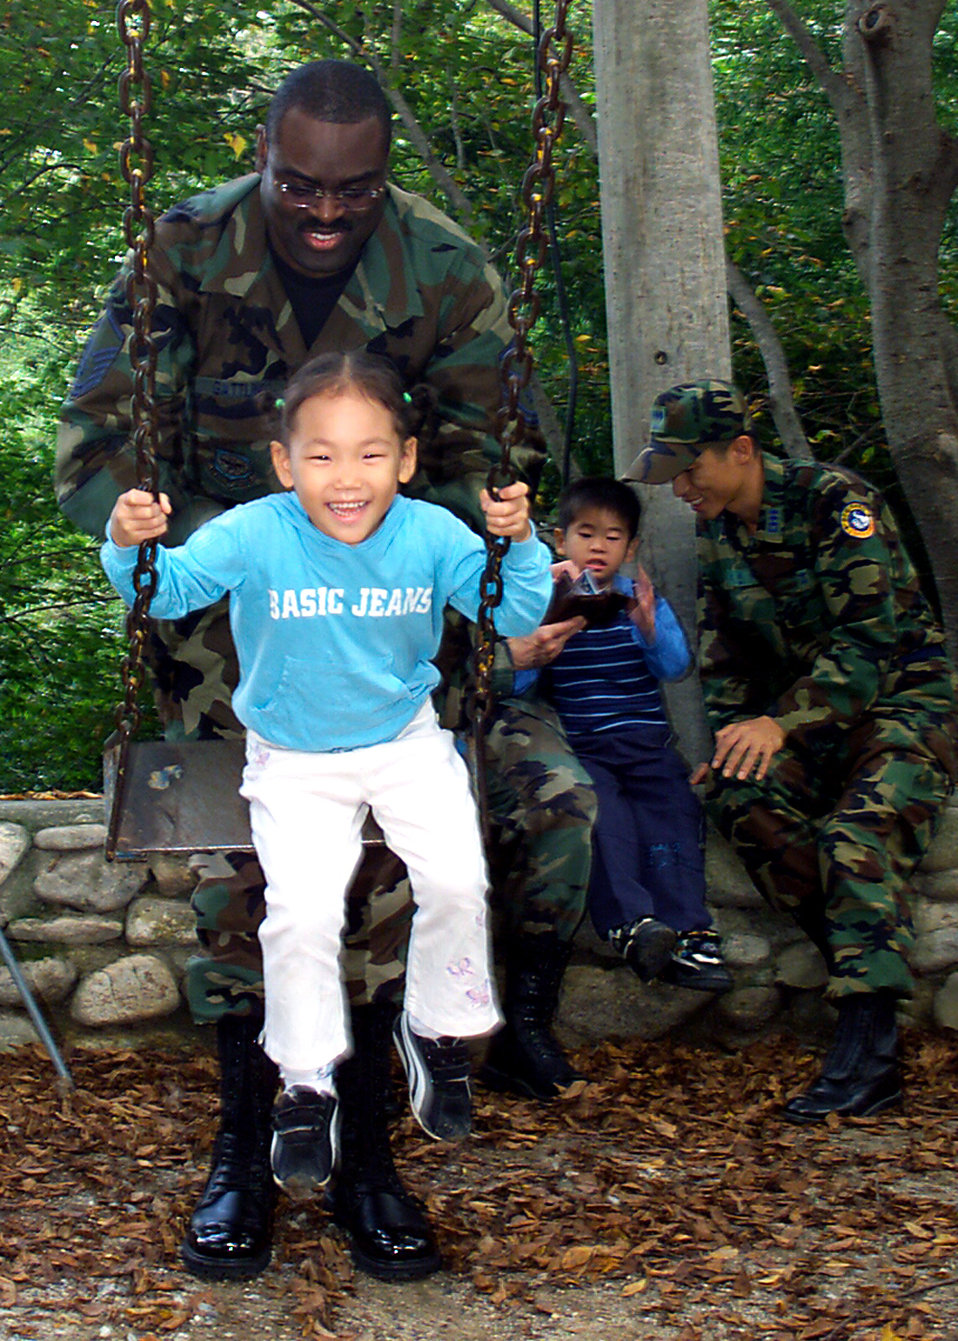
Deployed Airmen visit South Korean orphanage

GWANGJU, South Korea -- Master Sgt. Frederick Gattling and a South Korean airman play with children at a local orphanage Sept. 24. Sergeant Gattling is a chaplain assistant with the 3rd Air Expeditionary Group.